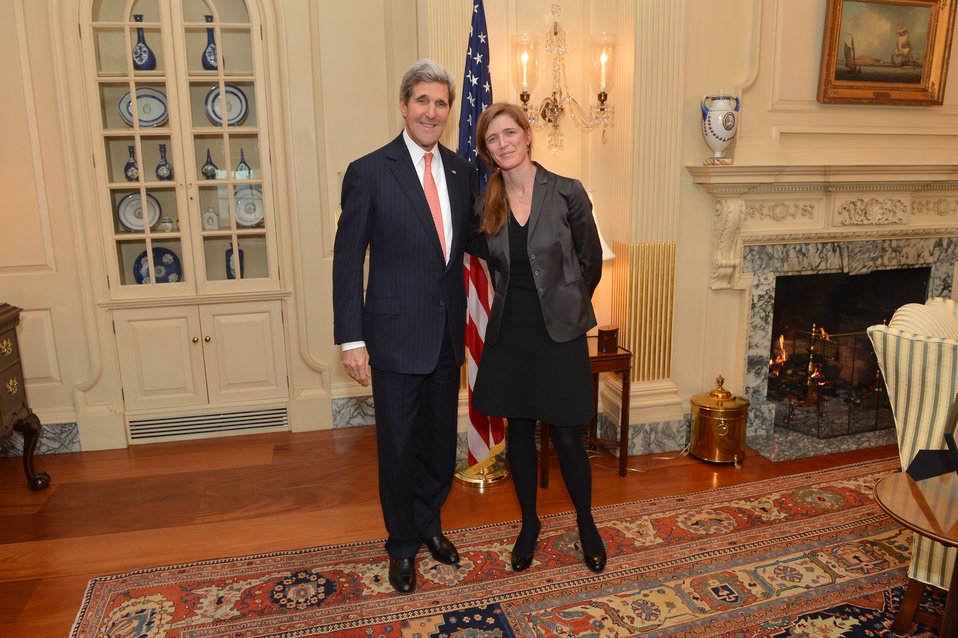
Secretary Kerry Meets With Ambassador Power

U.S. Secretary of State John Kerry meets with Ambassador Samantha Power, the U.S. Permanent Representative to the United Nations, at the U.S. Department of State in Washington, D.C., on January 28, 2014.